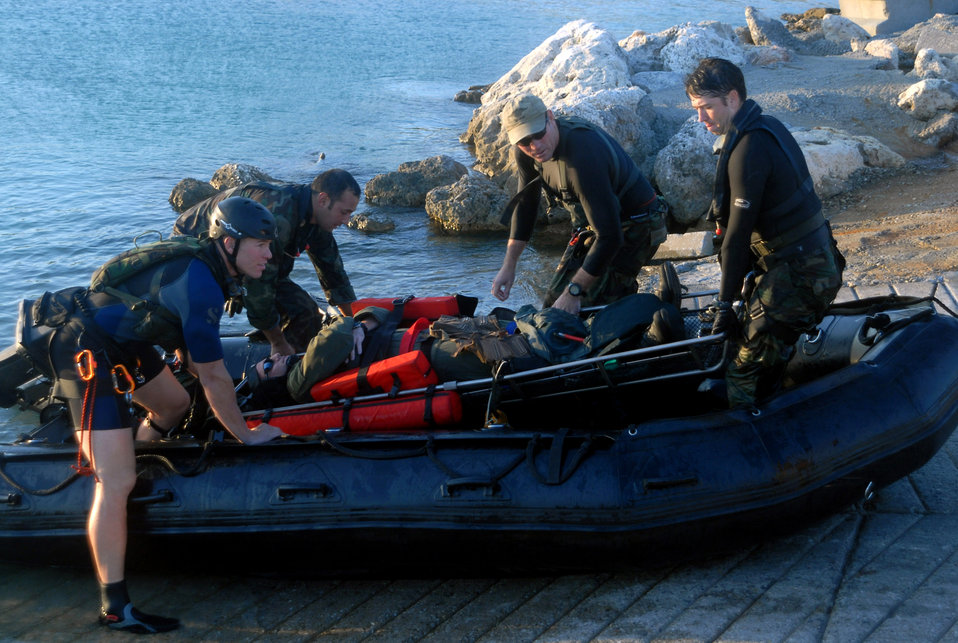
Airmen practice water rescue

Members of the 31st Rescue Squadron from Kadena Air Base, Japan, prepare to transport Capt. Derek Flynn to medical facilities there after pulling him from the waters off the coast of Okinawa. Captain Flynn was placed in the water Oct. 24 as part of a survival, evasion, resistance and escape exercise held during operational readiness exercise Beverly High 08-1. Captain Flynn is with the 67th Fighter Squadron.